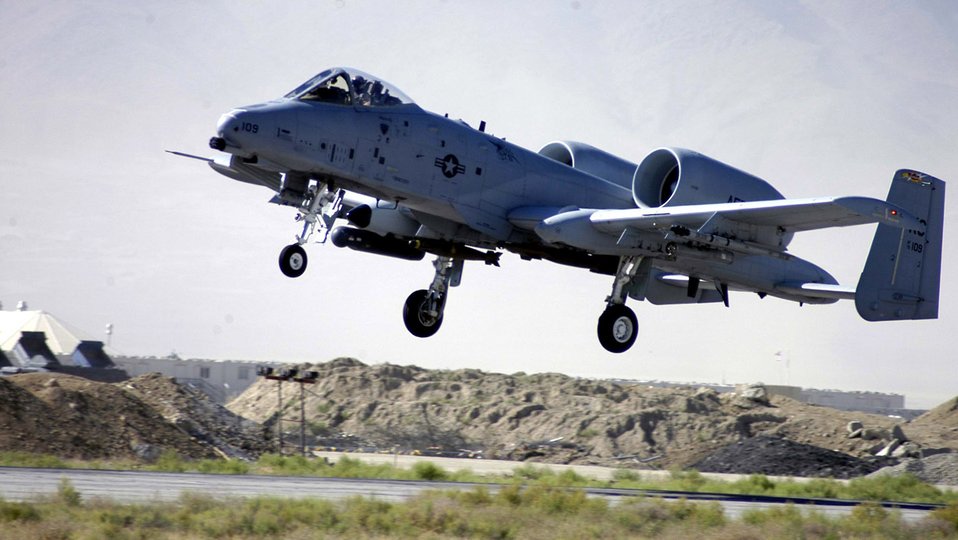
CENTAF Airpower Summary for March 20, 2007

A-10 Thunderbolt IIs, like this one taking off from Bagram Air Base, Afghanistan, are among the various U.S. Central Command Air Forces air assets available for providing close-air support for coalition troops in contact with enemy forces in Iraq and Afghanistan. The A-10 is specially designed for close air support of ground forces and can be used against all ground targets, including tanks and other armored vehicles.